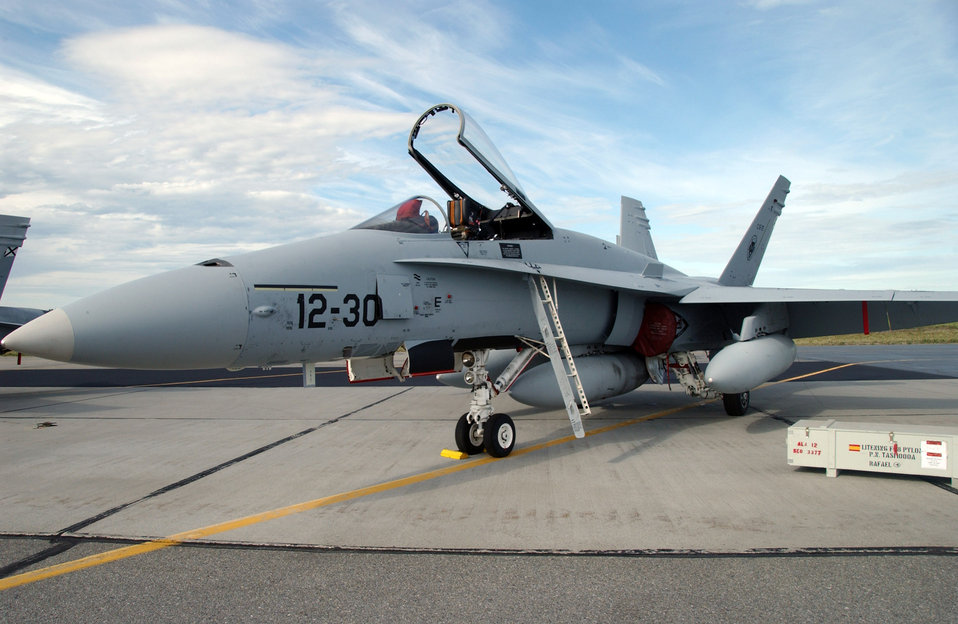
Red Flag-Alaska 07-3

A Spanish F-18 sits on the flight line at Eielson Air Force Base, Alaska, July 10 waiting to be serviced before a training mission. A group of Spanish airmen are participating in Red Flag-Alaska 07-3, a multi-service, multi-platform coordinated, combat operations exercise, which runs through the July 27.